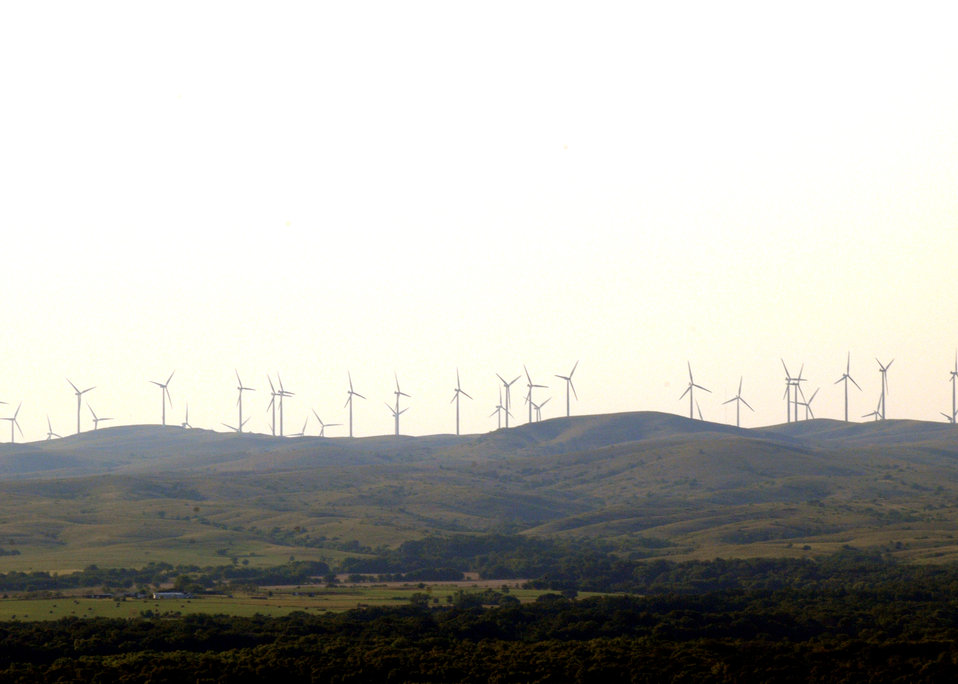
Wind turbines line the Wichita mountains near Medicine Park, Commanche County, Oklahoma.